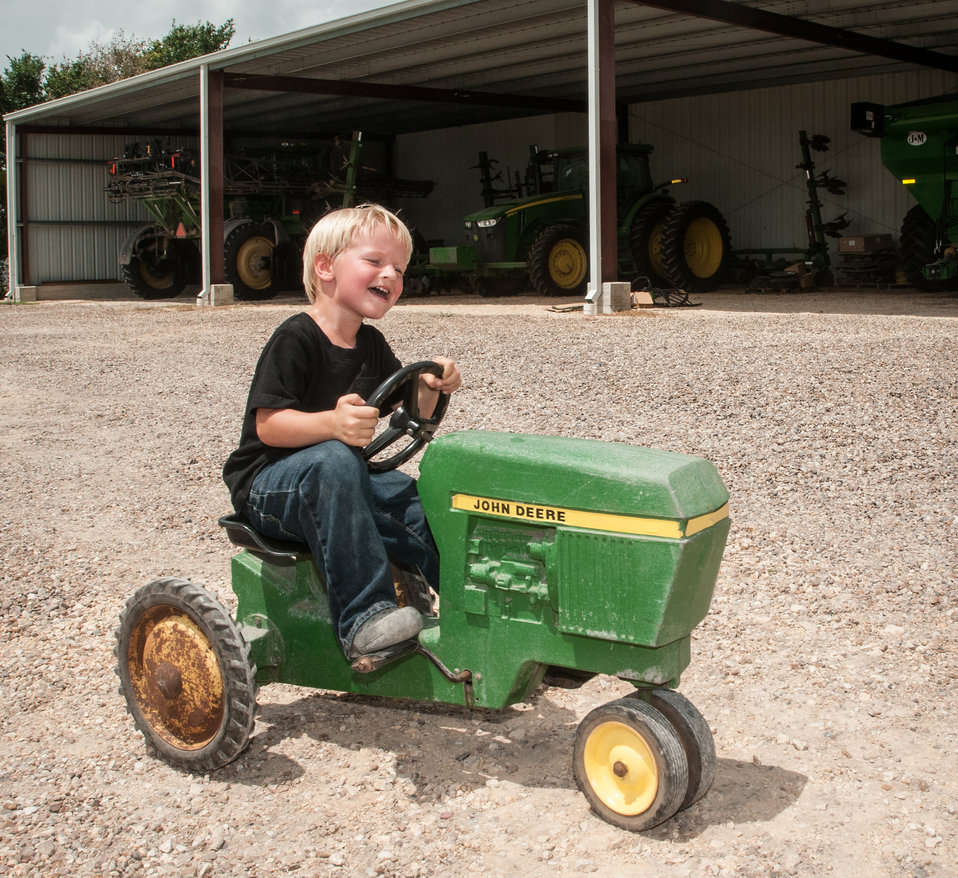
Hayden Popp (2, pronounced Pope) powers his tractor past some farm equipment at Popp Farms 05 in El Campo, TX, on Jun. 20, 2013. Hayden's family spans five generations and they currently grow cotton and milo (grain sorghum) and are part of the United Agricultural Cooperative, Incorporated.